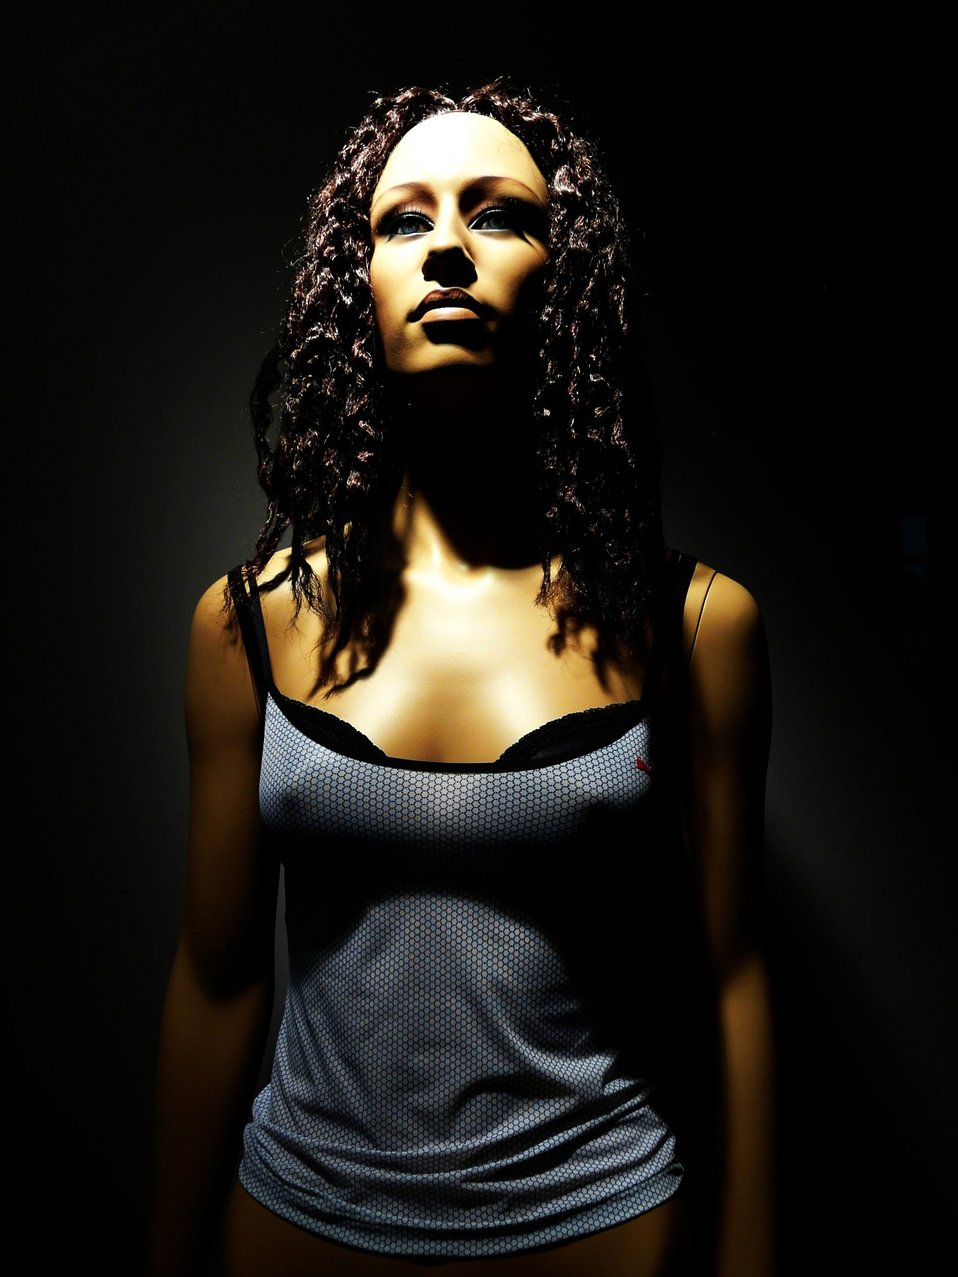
Sexy girl

Mannequin with sexy clothes.